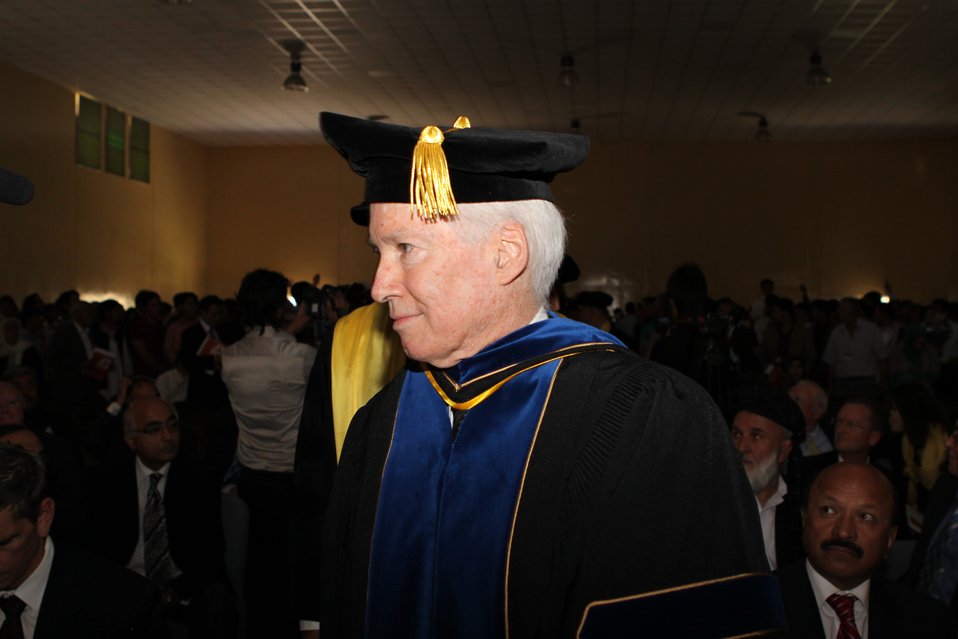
100526 AUAF Graduation 107